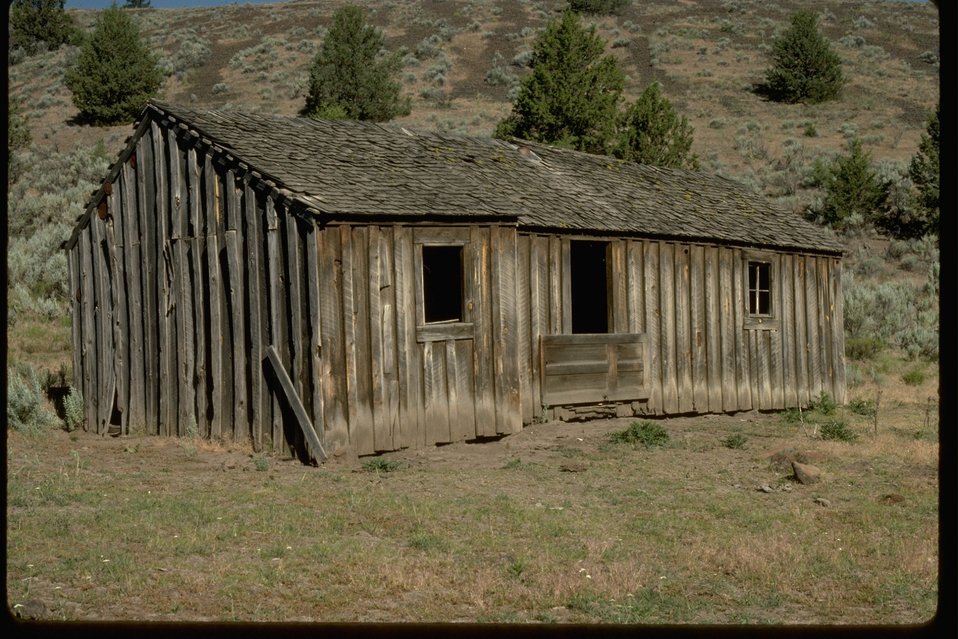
Historic building located in Brush Canyon.